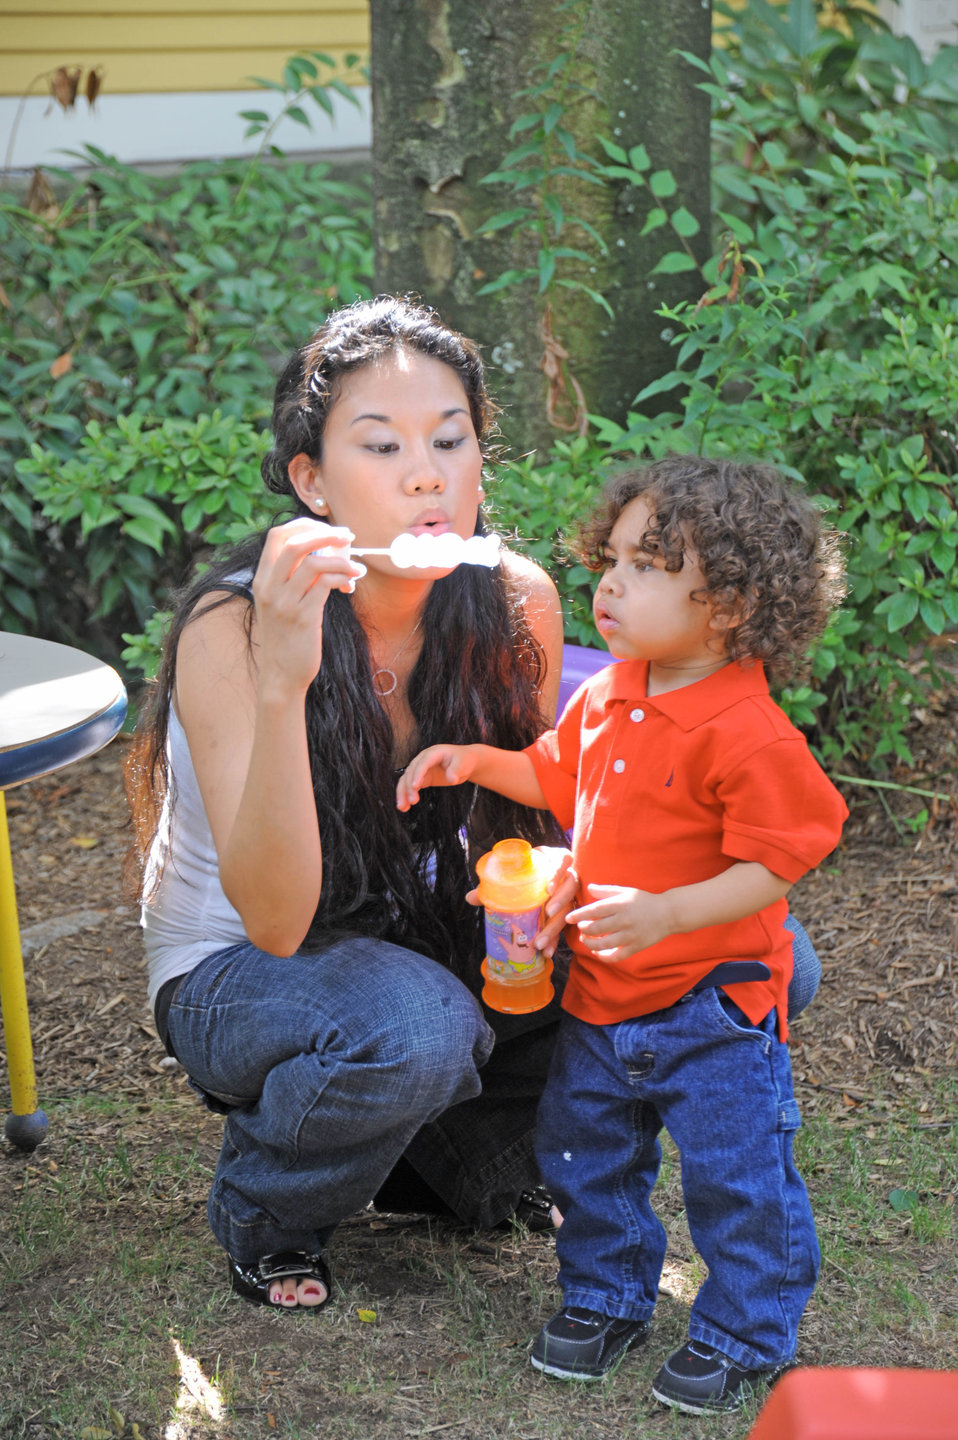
Genghis Webb

Julie and Genghis Webb blow bubbles in the backyard of the Ronald McDonald House July 20, 2010, in New Haven, Conn. The Webb family has been staying at the Ronald McDonald House following Genghis liver transplant surgery in April, when his father, Senior Airman Mario Webb, donated 20 percent of his liver to his son. Airman Webb is assigned to the 23rd Special Tactics Squadron at Hurlburt Field, Fla.